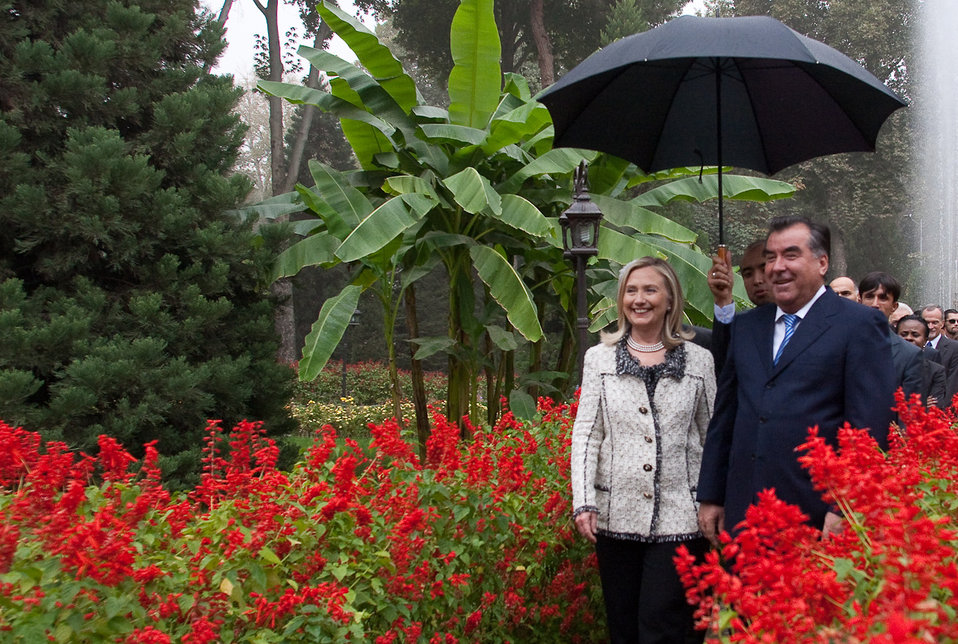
Secretary Clinton Meets With Tajik President Rahmon

U.S. Secretary of State Hillary Rodham Clinton meets with Tajik President Emomali Rahmon at the Presidential Dacha in Dushanbe, Tajikistan, on October 22, 2011.